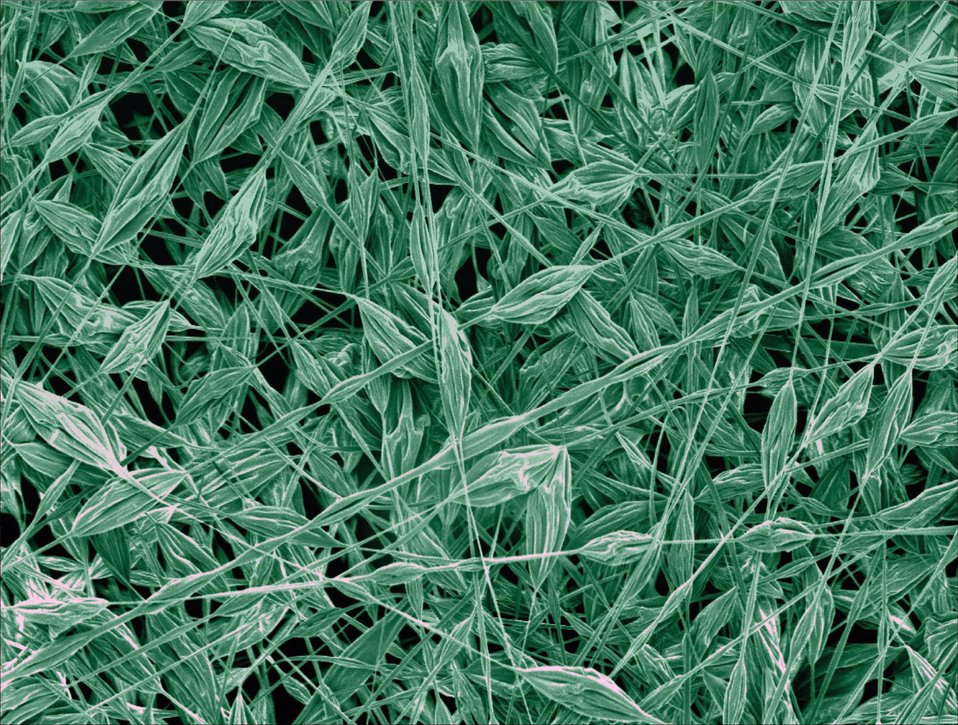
Air Force funds research into oil repellent surfaces

Air Force Office of Scientific Research officials are funding investigations into super oil repellent sufaces. This graphic shows the magnification of FluoroPOSS microfiber, which is water and oil repellent. It is typically up to 5 microns in diameter, or one-twentieth the diameter of a human hair.